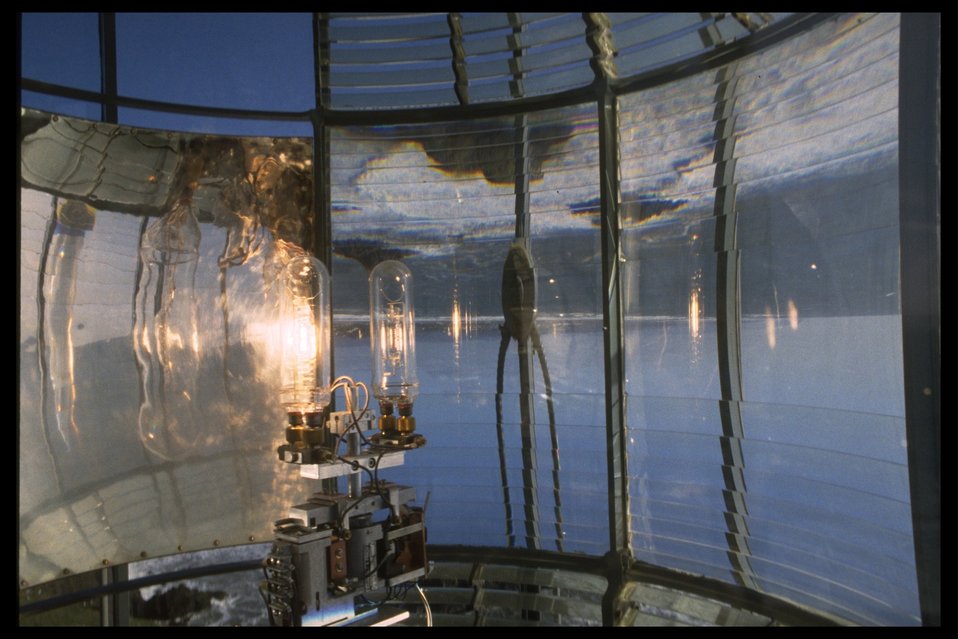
Yaquina Head lighthouse lens and bulb.